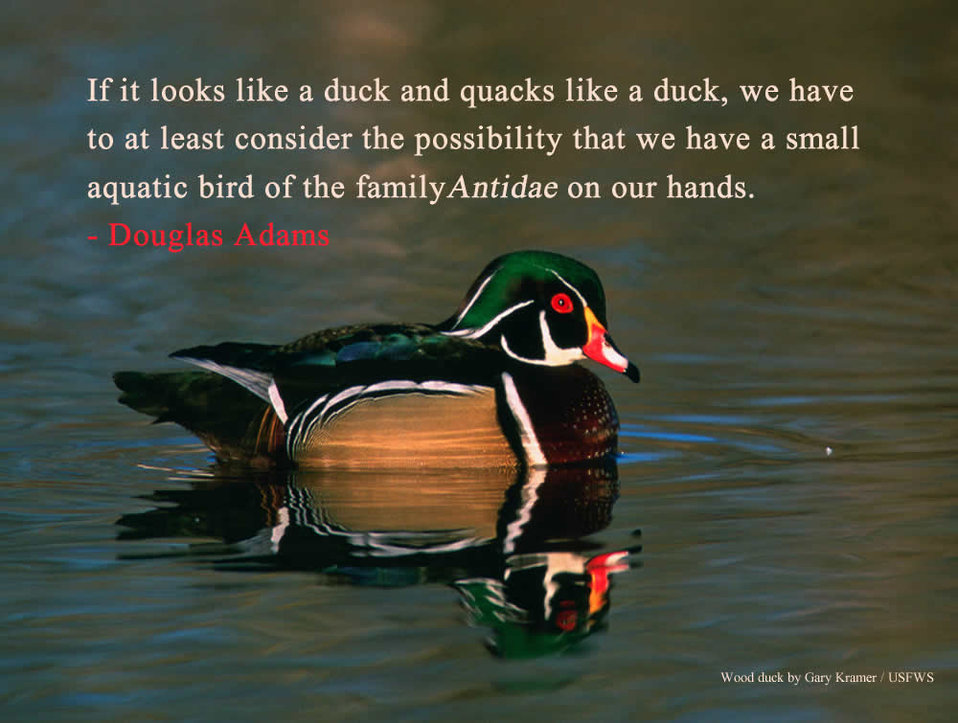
Wood Duck

Federal Duck Stamps are a vital tool for wetland conservation. Ninety-eight cents out of every dollar generated by the sale of Federal Duck Stamps goes directly to purchase or lease wetland habitat for protection in the USFWS National Wildlife Refuge System.